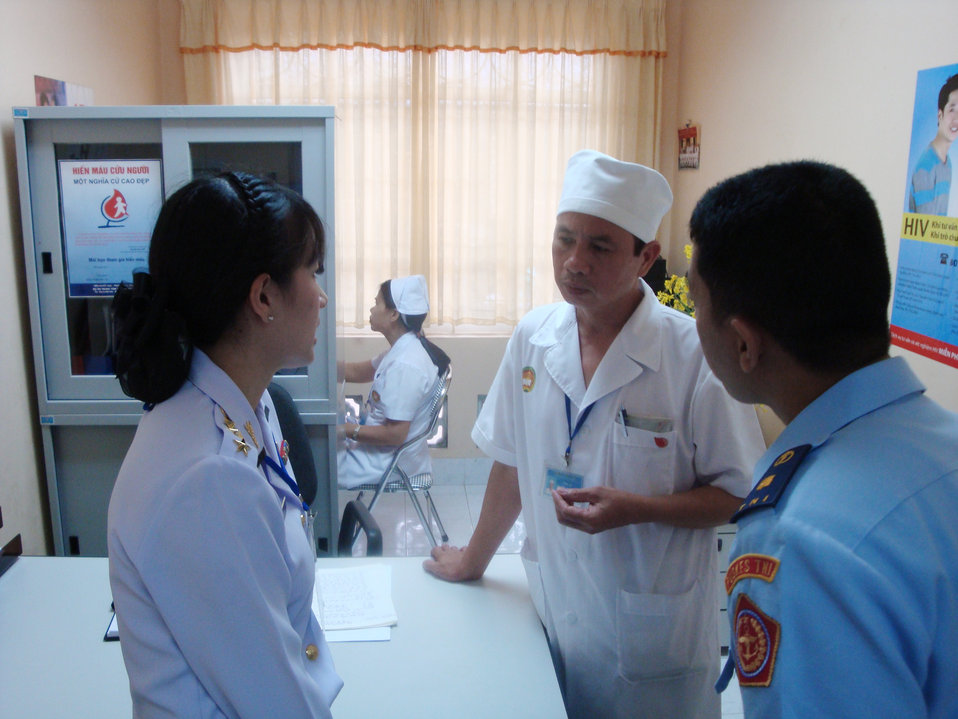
U.S., Vietnam host Asia-Pacific military nursing symposium

Military nurses from Indonesia, Thailand, and Vietnam discuss medical issues affecting the Asia-Pacific region during the 3rd annual Asia-Pacific Military Nursing Symposium Aug 3 through 7 in Hanoi, Vietnam. The five-day conference, hosted by U.S. Pacific Command and the Vietnam People's Army focused on nursing education, career development, global pandemic preparedness and disaster management.